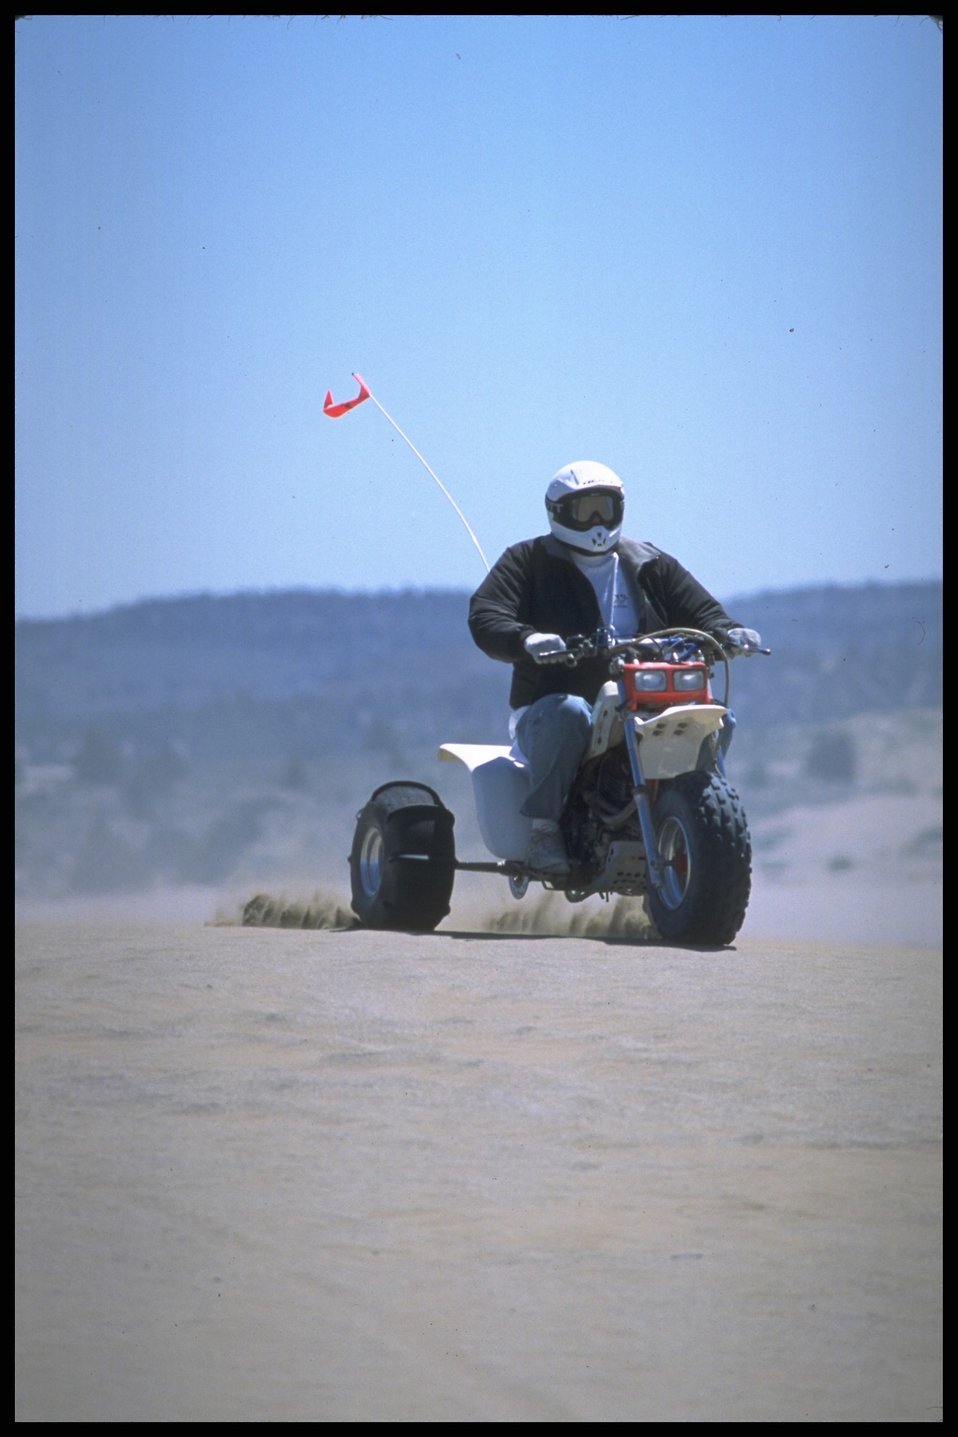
ATV in Sand Dunes, Christmas Valley, Lakeview District.